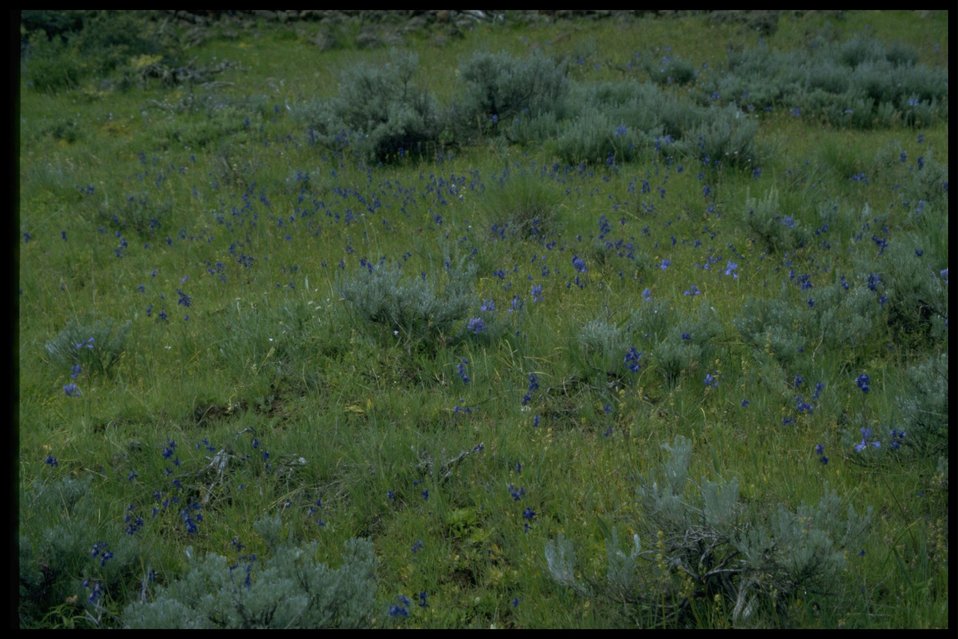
Farshot of Moist Swale with Larkspur and Brodiaea wildflowers.